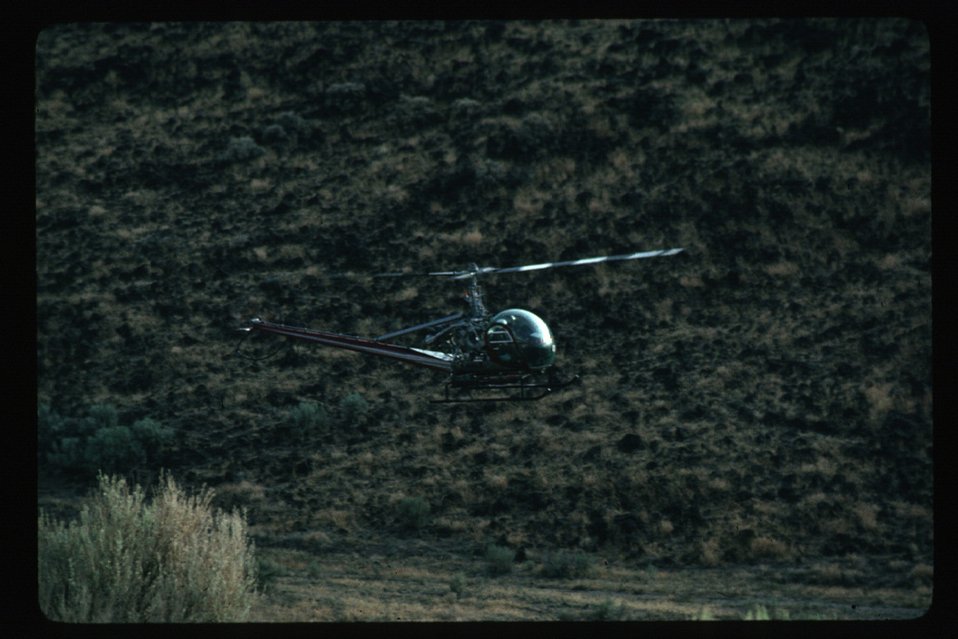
Wild horse roundup by helicopter Wild Horse and Burro Adoption Program LSRD Lower Snake River District